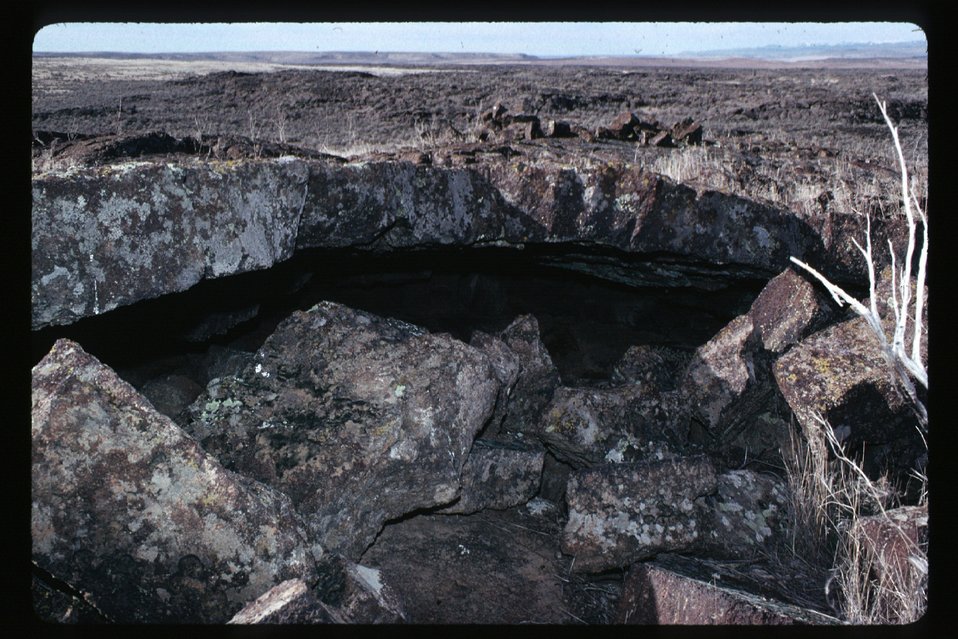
Rock formation Wildlife USRD Upper Snake River District